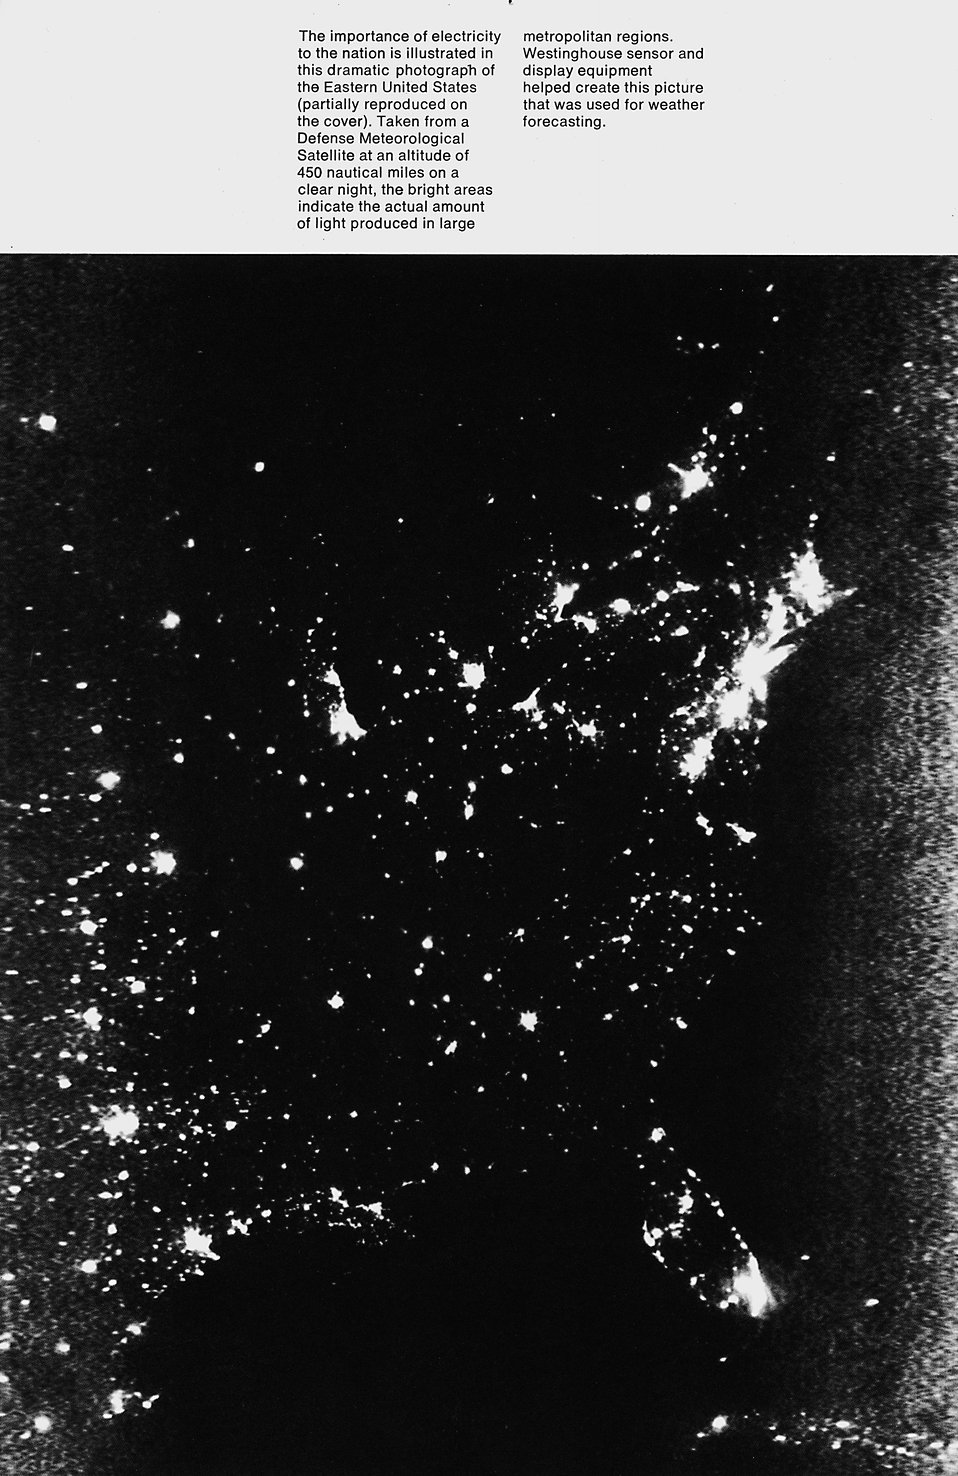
Westinghouse Annual Report. The importance of electricity to the nation is illustrated in this dramatic photograph of the Eastern United States.